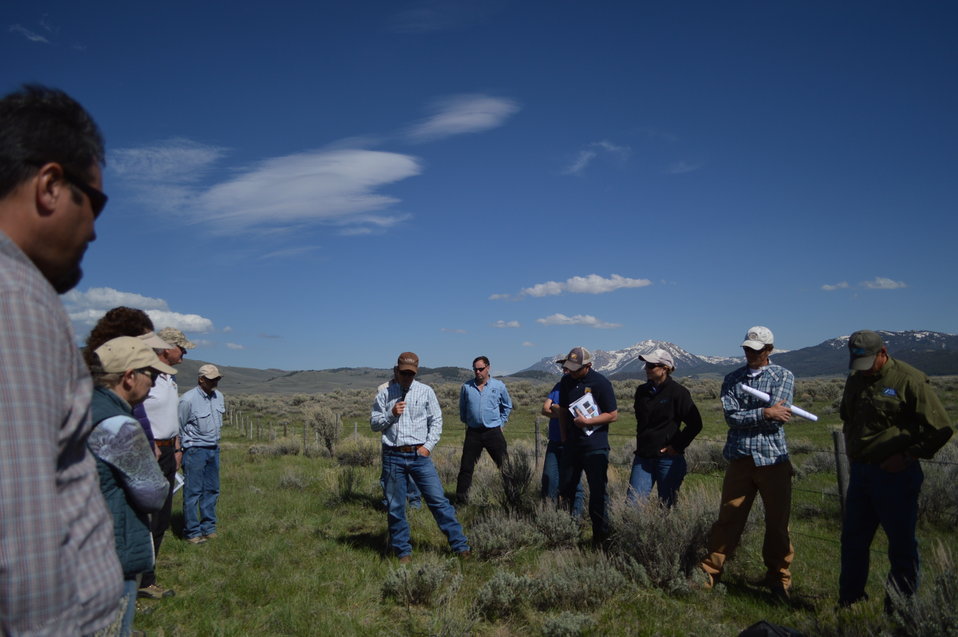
Regional Leadership Visit to Montana 2014